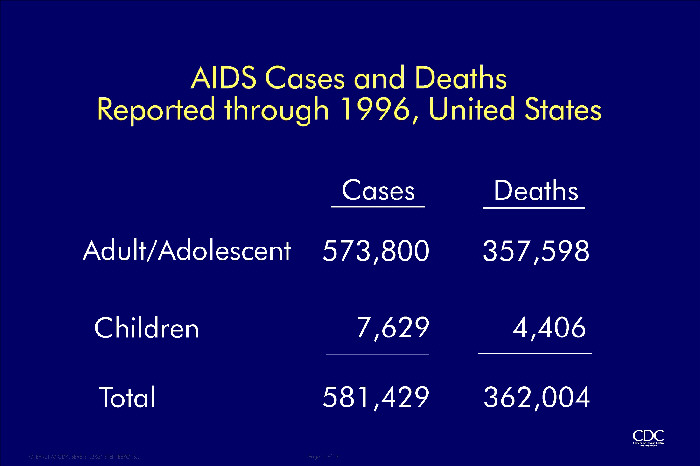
AIDS Cases and Deaths Reported Through 1996, United States